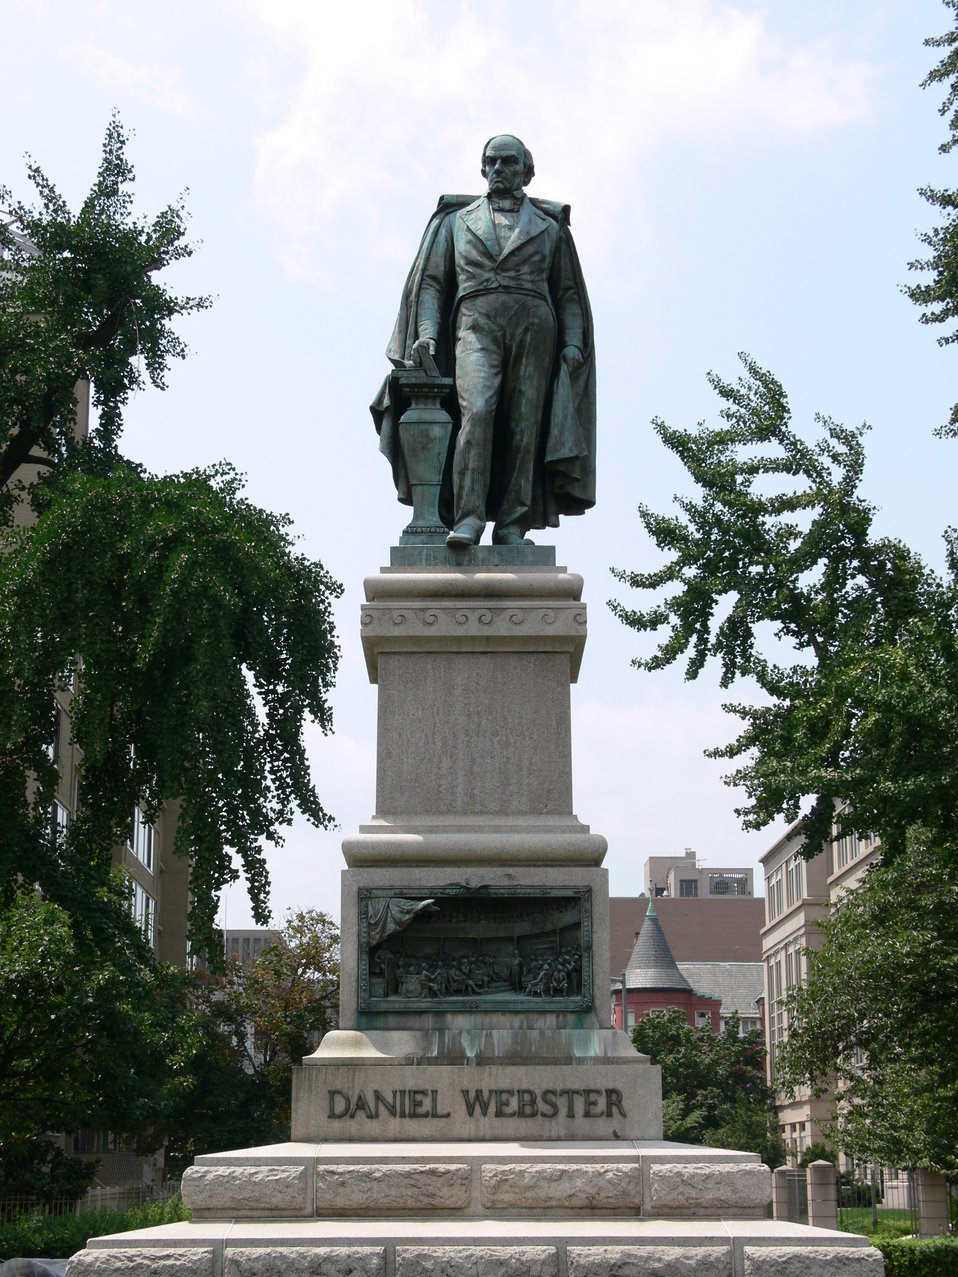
Monument to Daniel Webster created by sculptor Gaetano Trentanove in 1900, located on Scott Circle in Washington, D.C.